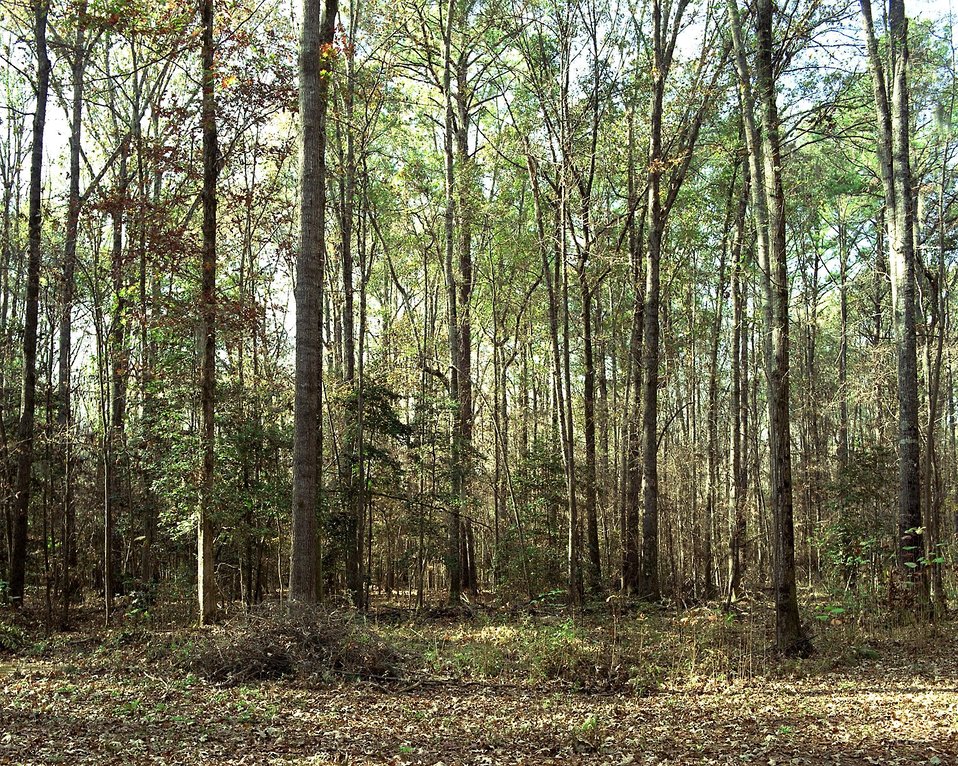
TREES AT THE SAVANNAH RIVER SITE, AIKEN, SC.